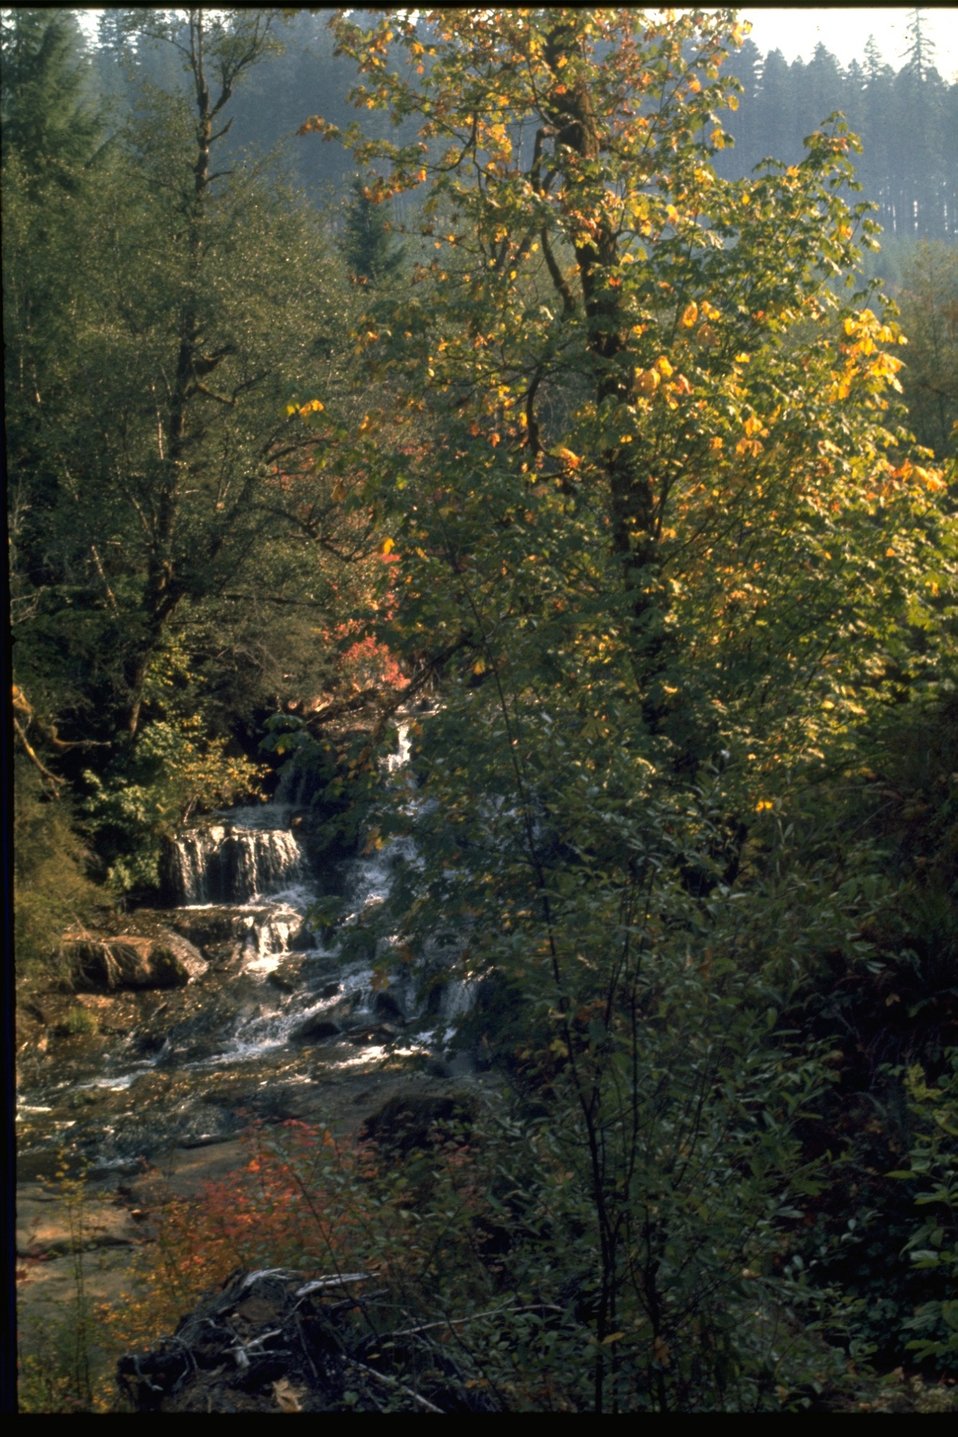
Alsea Falls.